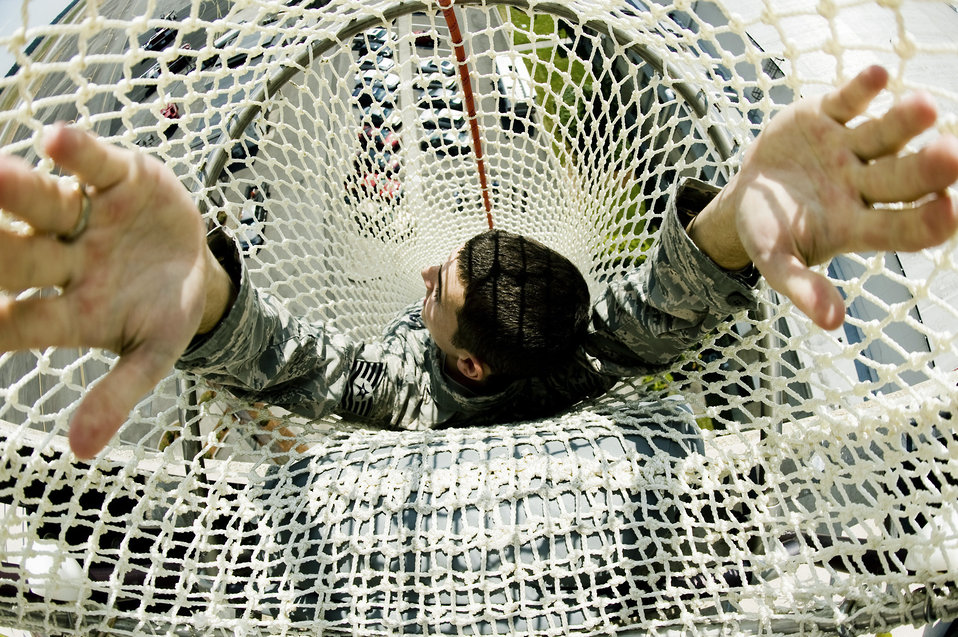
Air traffic controllers practice emergency exit procedures

Tech. Sgt. Jordan Applegate teaches Airmen evacuation safety procedure by demonstrating the safest way to drop down the Baker Life Chute during a training exercise Aug 3, 2010, at Joint Base Lewis-McChord, Wash. The training familiarizes controllers with a secondary means of escape from the 100-foot structure.